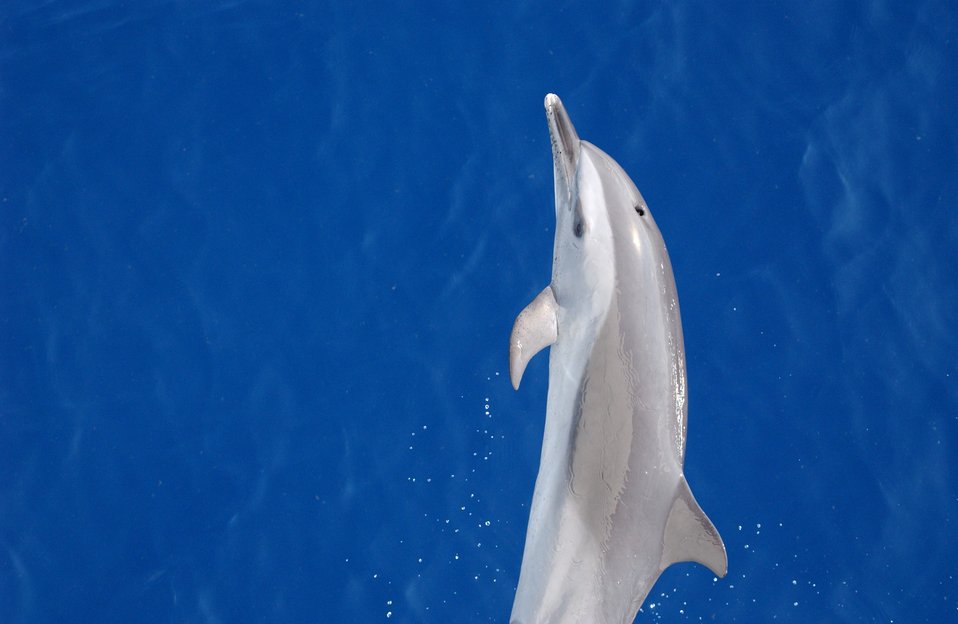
Pantropical spotted dolphin